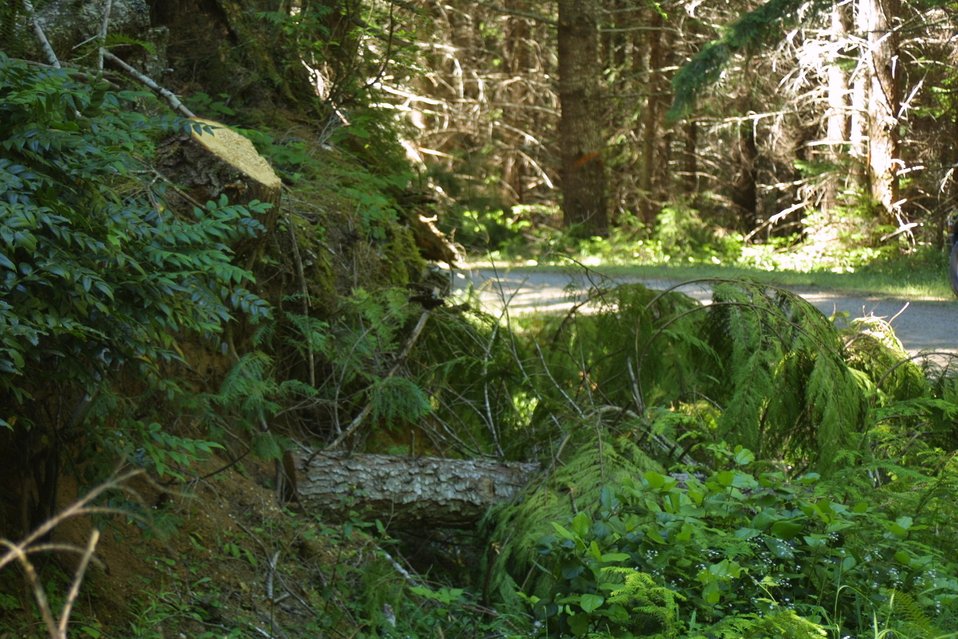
Camas East Timber Sale in Late Successional Reserve.